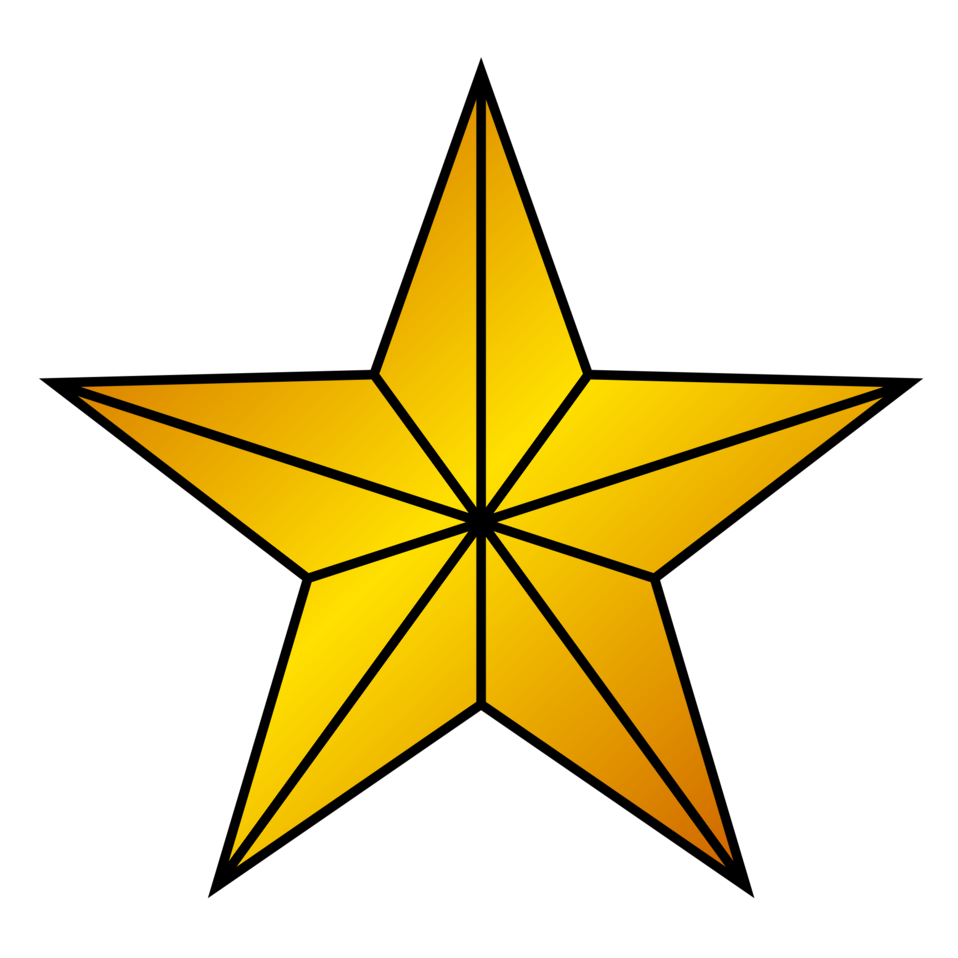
A gold star